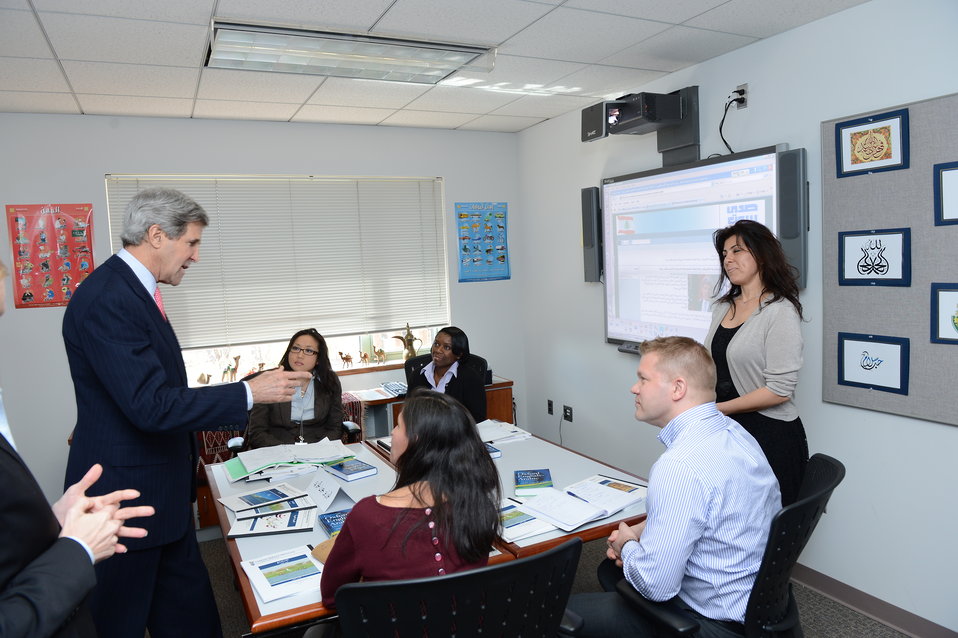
Secretary Kerry Drops by a Course at the Foreign Service Institute

U.S. Secretary of State John Kerry drops by a course during his visit to the Foreign Service Institute in Arlington, Virginia, on March 15, 2013.